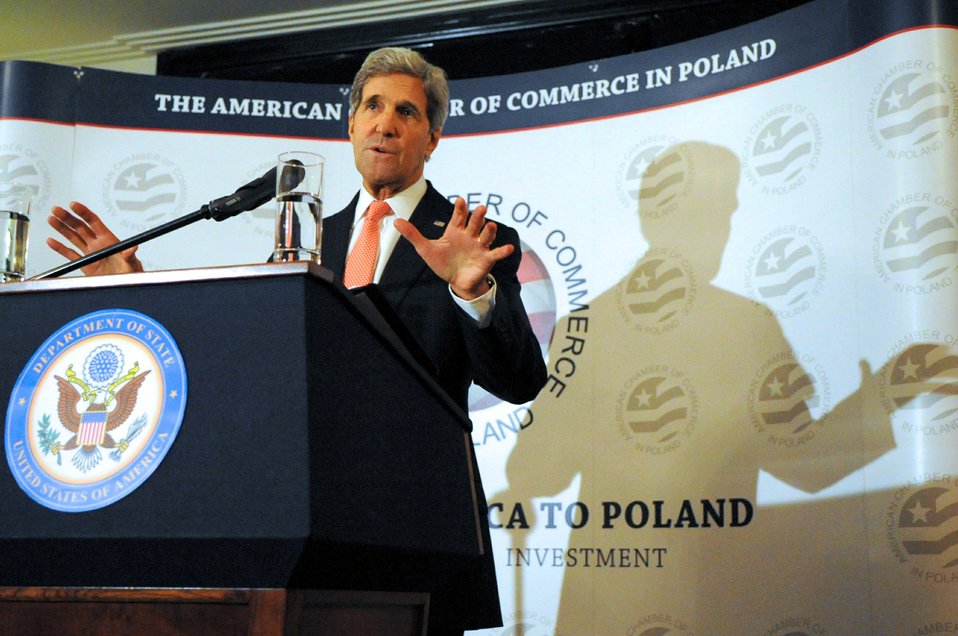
Secretary Kerry Addresses the American Chamber of Commerce in Warsaw

U.S. Secretary of State John Kerry talks about transatlantic trade with members of the American Chamber of Commerce in Warsaw, Poland, on November 5, 2013.